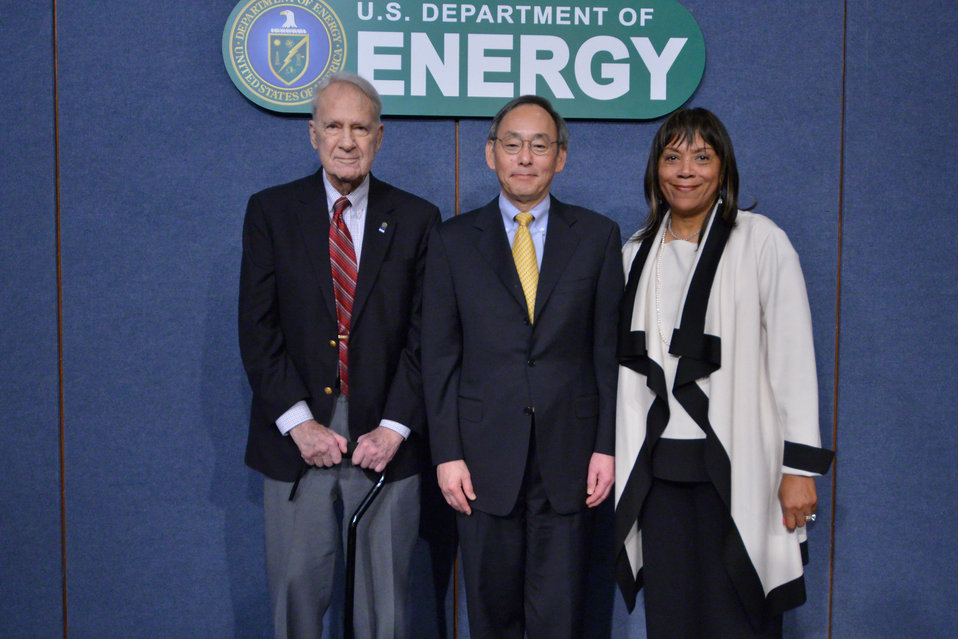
1 ED

Annie Whatley, a charter employee from the Office of Economic Impact and Diversity with Secretary Steven Chu, current Secretary of Energy, and Secretary James Schlesinger, first Secretary of Energy.